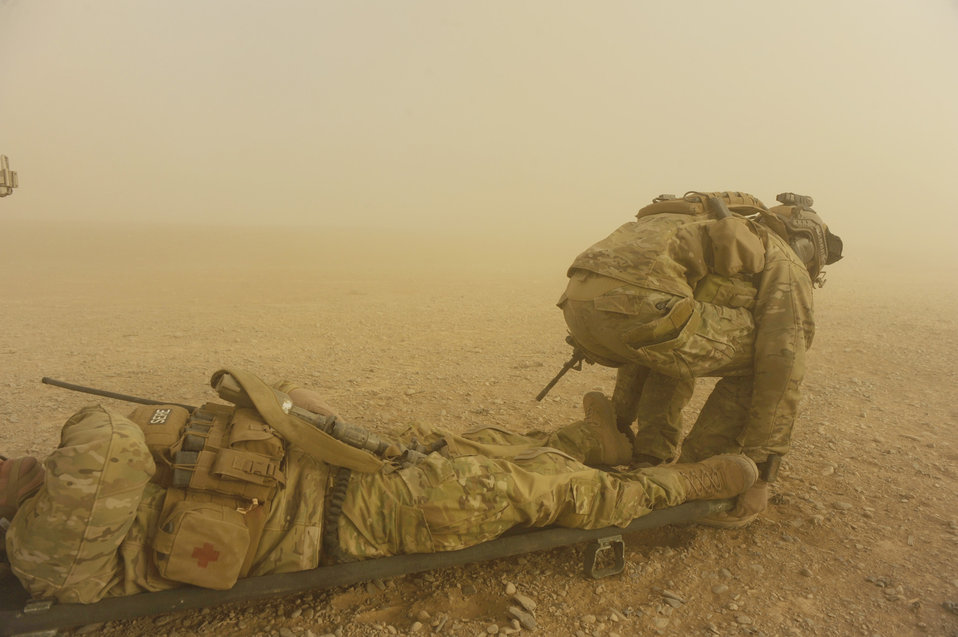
Kandahar Airmen practice evacuation skills

Pararescuemen prepare to move a simulated 'casualty' in order to load him onto an HH-60 Pave Hawk during an exercise Dec. 24, 2010 near Kandahar, Afghanistan. The Airmen are assigned to the 46th Expeditionary Rescue Squadron.